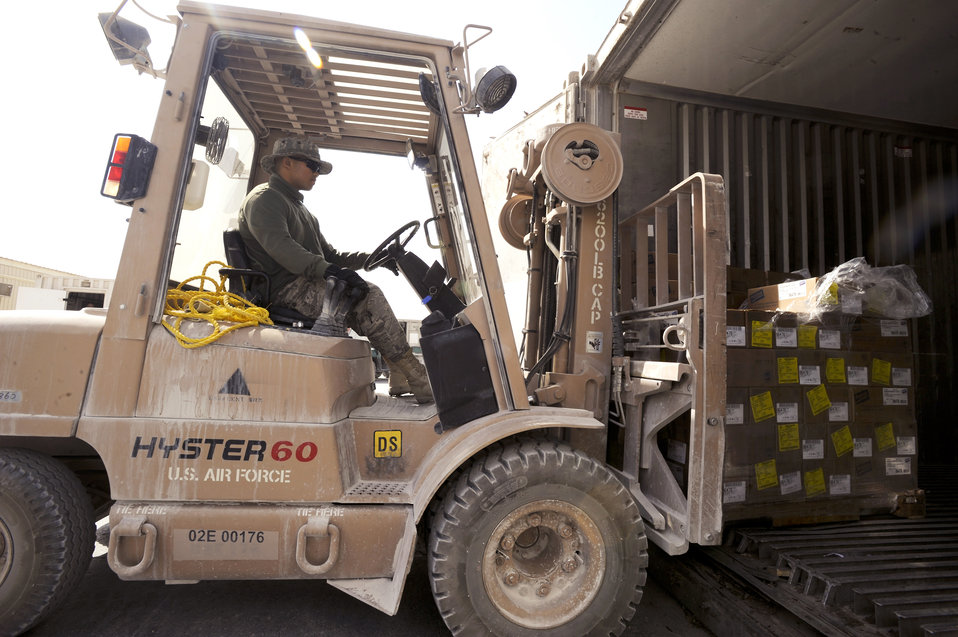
Feeding the force

Staff Sgt. Samneng Seng restocks a food storage container with supplies March 23 at an air base in Southwest Asia. Sergeant Seng is with the 379th Expeditionary Force Support Squadron and is the store room manager for the Independence Dining Facility where he ensures all the food on the menu for the following day is ordered and stocked properly. Sergeant Seng is a native of Lynn, Mass., and is deployed from Pease Air National Guard Base, N.H.